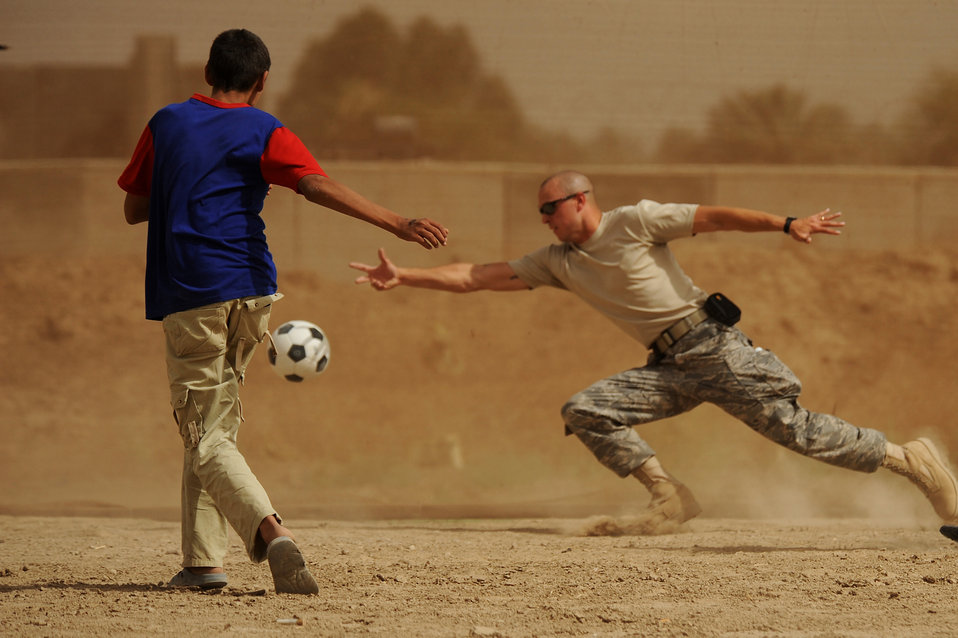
Sather Airmen foster relationships with local community

Senior Airman Charles Woford stretches to block a shot by a local Iraqi child June 6 at Sather Air Base, Iraq. Airman Woford, assigned to the 447th Air Expeditionary Group Chapel, was one of a group of Airmen who delivered toys and gits donated by the Airmen assigned to Sather AB.